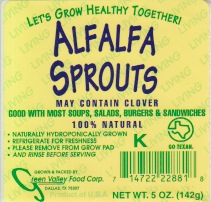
RECALLED - Alfalfa Sprouts

December 22, 2011 - Product Recall - RECALL Green Valley Food Corp. “Let’s Grow Healthy Together!” Alfalfa Sprouts 5 oz. containers because of a possible health risk.